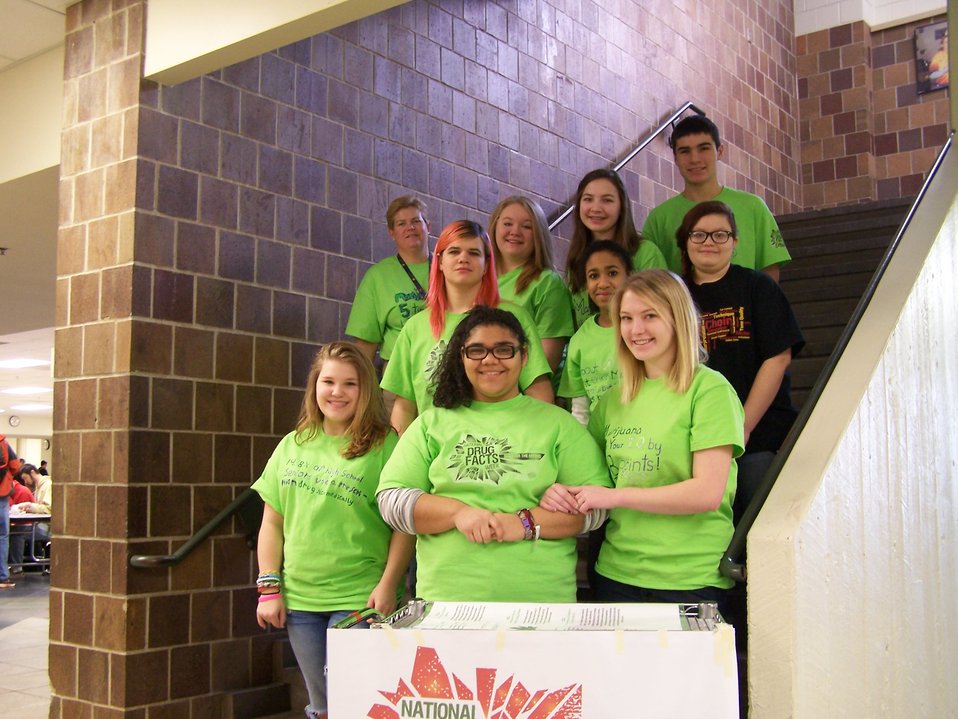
MN Teens Take a Stand during NDFW

Henry Sibley High School SADD members from Mendota Heights, MN make their own statements regarding drug facts during National Drug Facts Week
Image provided by: Ann L. Lindberg, District #197 Chemical Health Coordinator and Students Against Destructive Decisions Advisor.